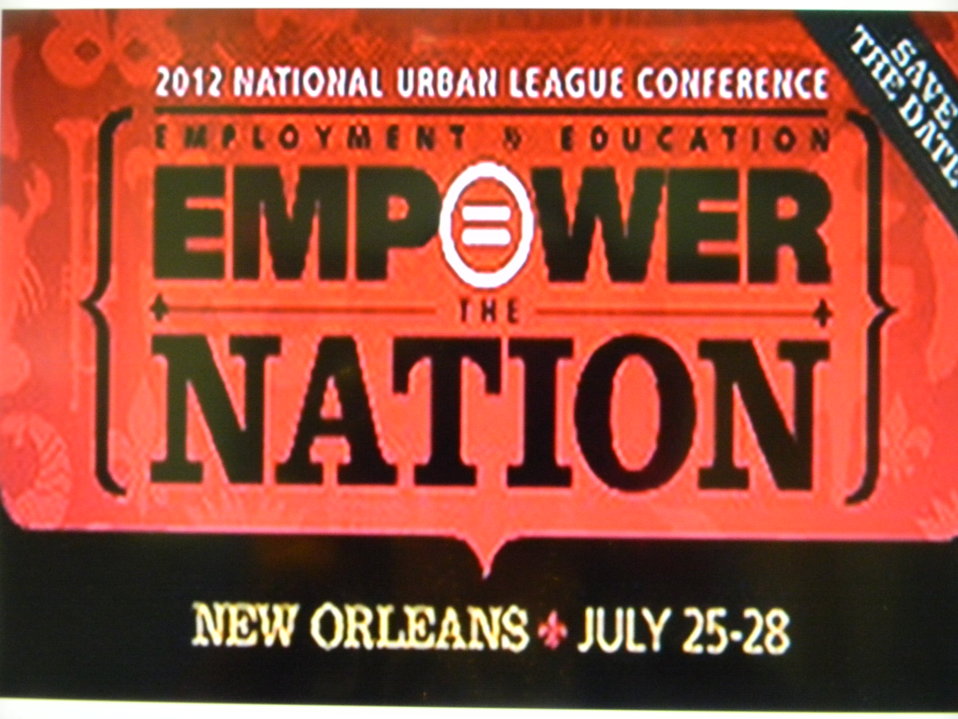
2012 National Urban League Conference

NUL Conference in New Orleans Louisiana July 25-28, 2012.